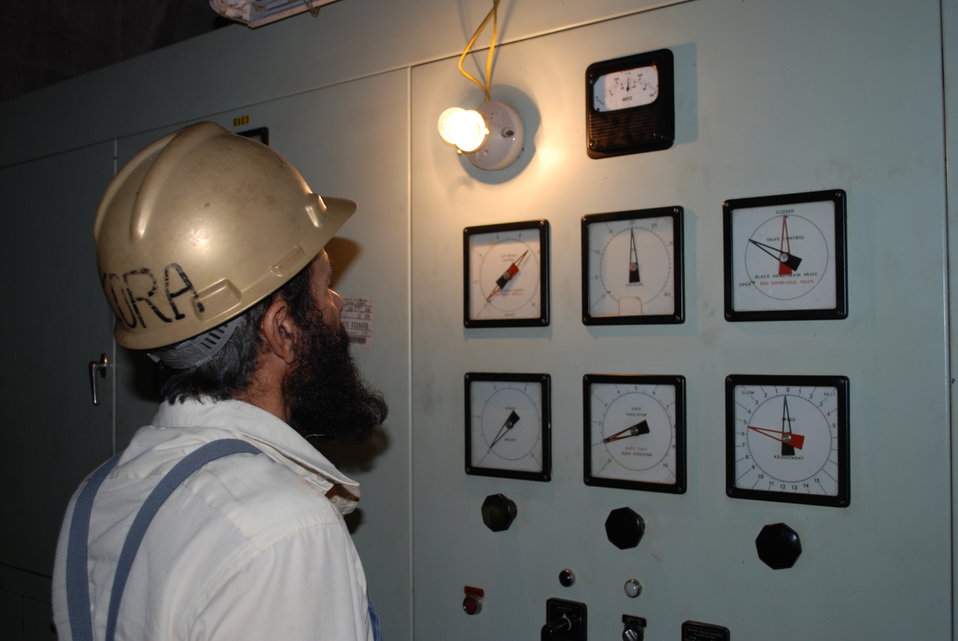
Kajaki - Eng. Rasoul